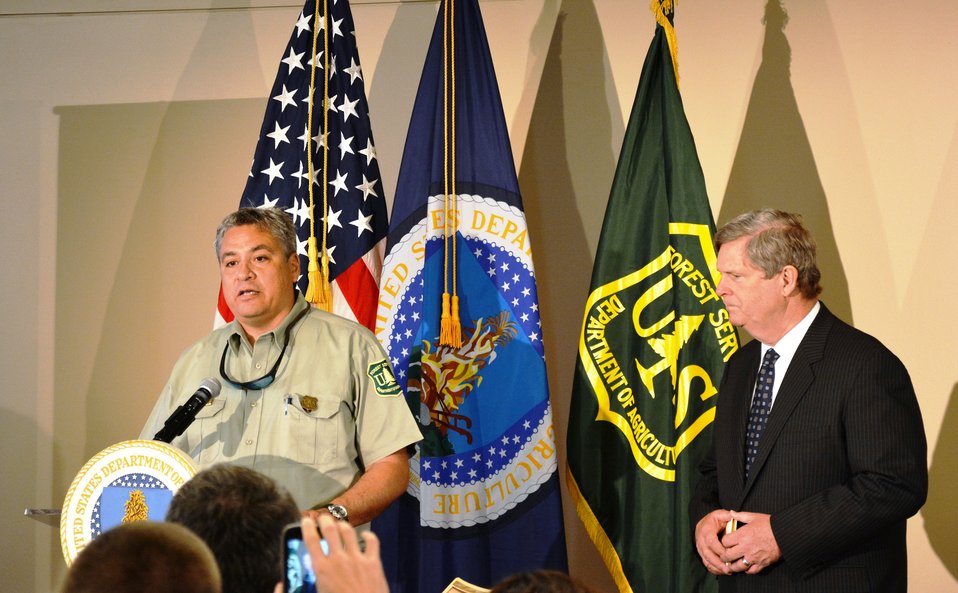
R2 Regional Forester Dan Jir’on introduces Agriculture Secretary Tom Vilsack at a press conference held at the History of Colorado Center to announce action to combat insects and diseases that weaken forests and increase fire risk in Denver, CO on May 20, 2014.